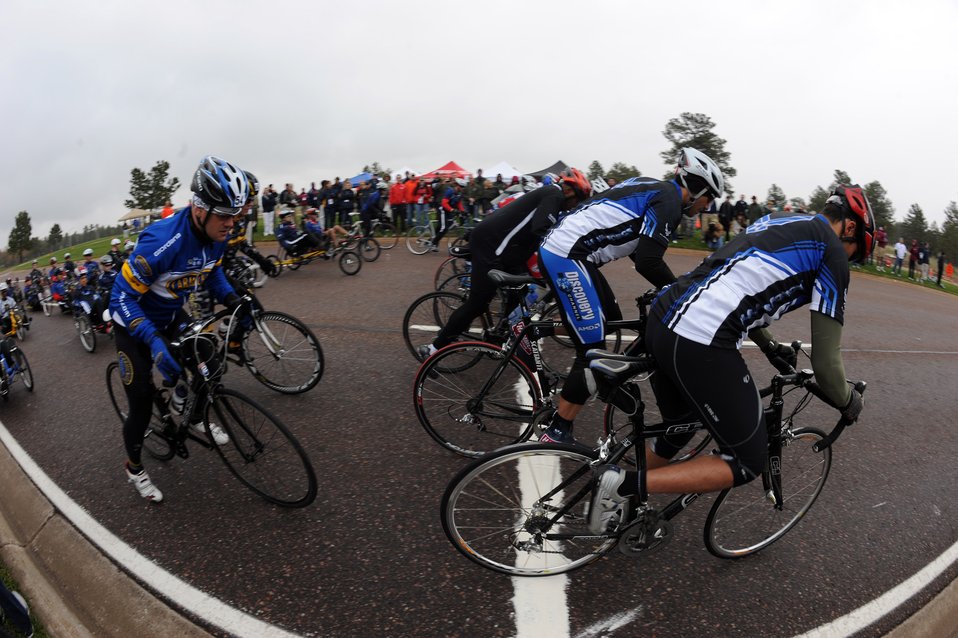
Warrior Games AF Cycling

Warrior Games athletes begin the 20-kilometer upright bike race for the inaugural Warrior Games May 13, 2010, at the U.S. Air Force Academy in Colorado Springs, Colo.